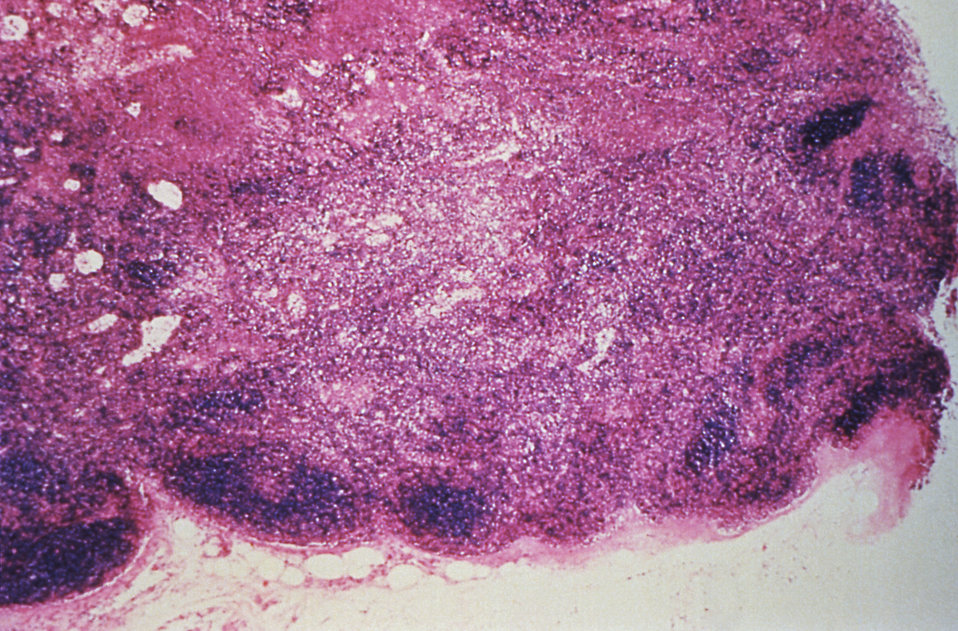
This is micrographic study of a lymph node from a Hantavirus pulmonary syndrome (HPS) patient.